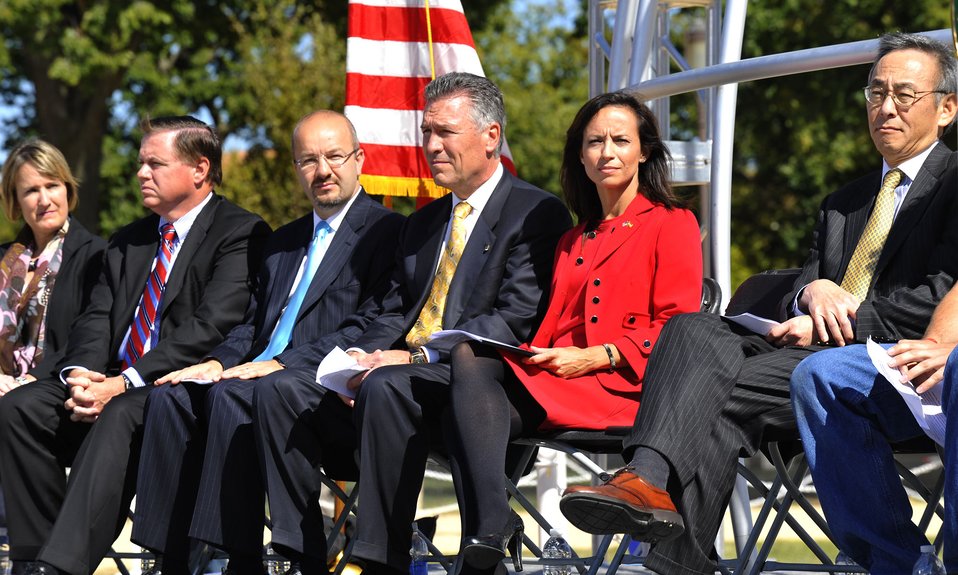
Solar Decathlon 2009 on the National Mall, with Sec. Chu

Solar Decathlon 09